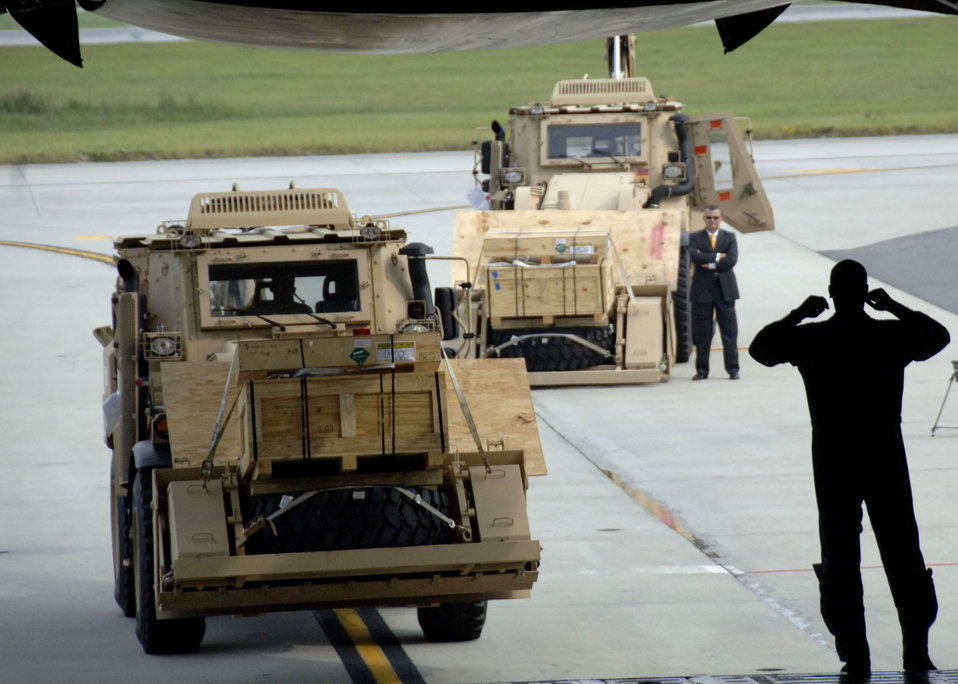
Charleston Airmen begin transporting new Army vehicles

An Airman from the Memphis Air National Guard guides an Army High Mobility Engineer Excavator into the back of a C-5 Galaxy Sept. 29 at Charleston Air Force Base, S.C. Charleston AFB is the first Air Force base to help in aiding in transporting the vehicles to forward deployed Soldiers and contractors in hostile environments. The HMEE is a newly developed military construction vehicle capable of a wide range of mobility affording more protection for the operator than conventional excavators.